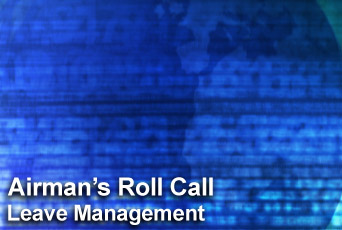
Airman's Roll Call: leave management

Now that summer is here, many Airmen are thinking about taking leave from work. However, there are changes for taking leave. This week's Airman's Roll Call explains those changes.